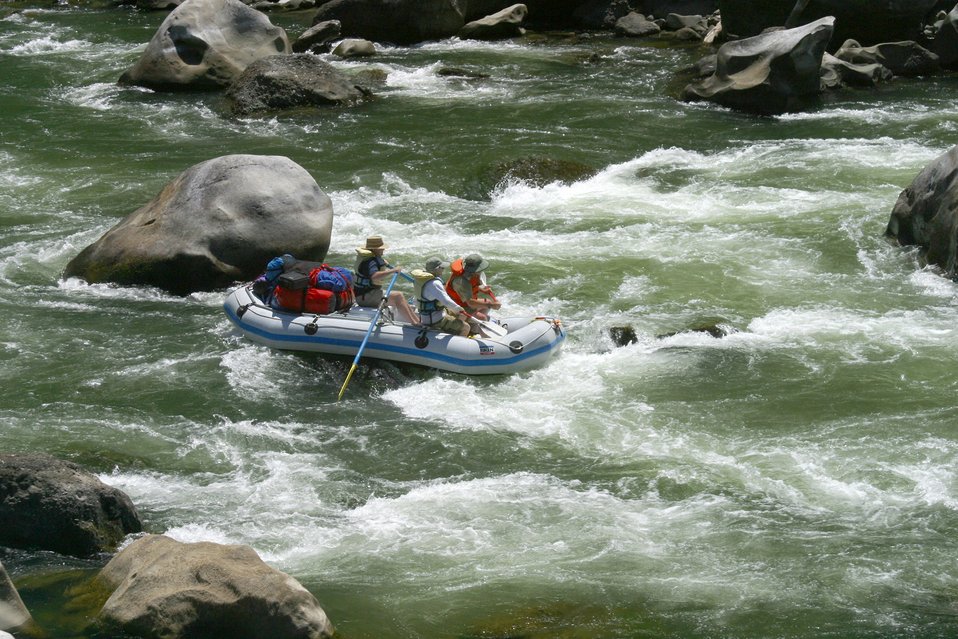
Blossom Rapids.